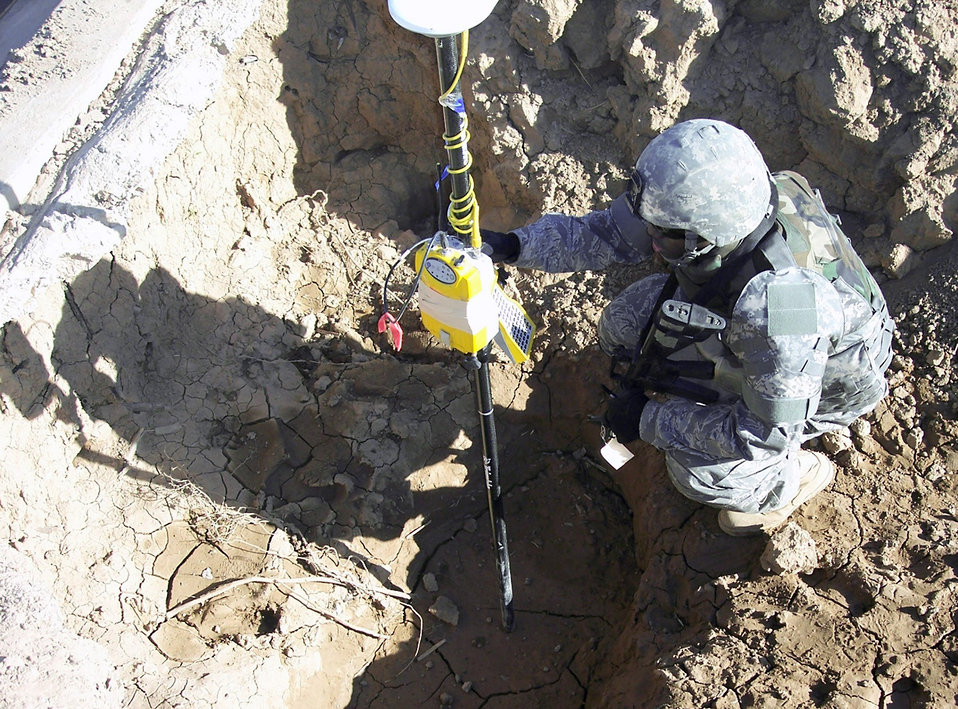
Engineering assistants help FOB quality of life

Senior Airman Renardo Sanders climbs down into a ditch near a levee Jan. 7 outside of Balad Air Base, Iraq, to collect elevation data. Airman Sanders is a 732nd Expeditionary Civil Engineering Squadron engineering assistant deployed from Beale Air Force Base, Calif.